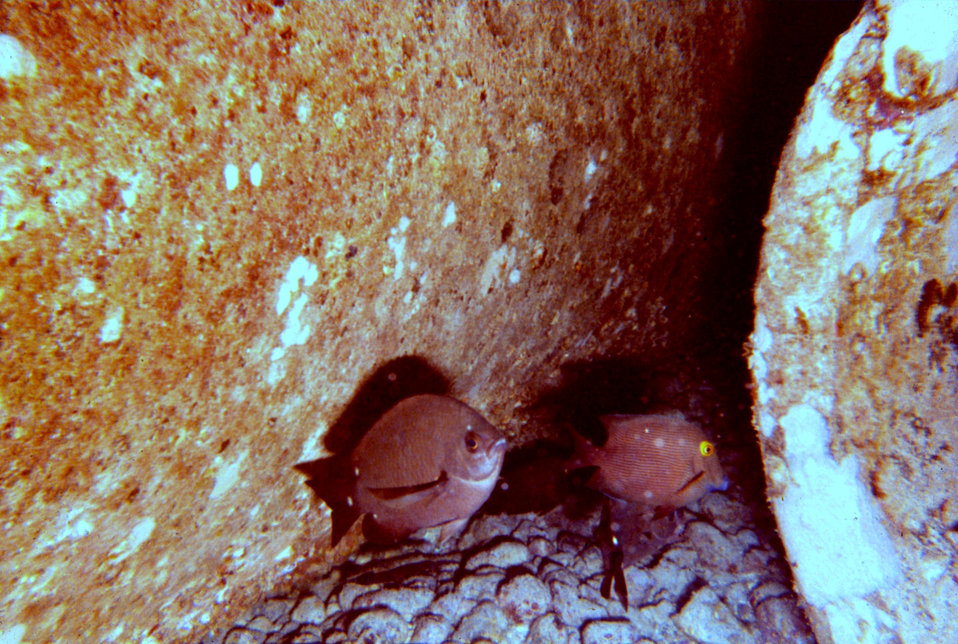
Ctenochaetus striogosus, surgeon fish, and damsel fish, Dascyllus albisella